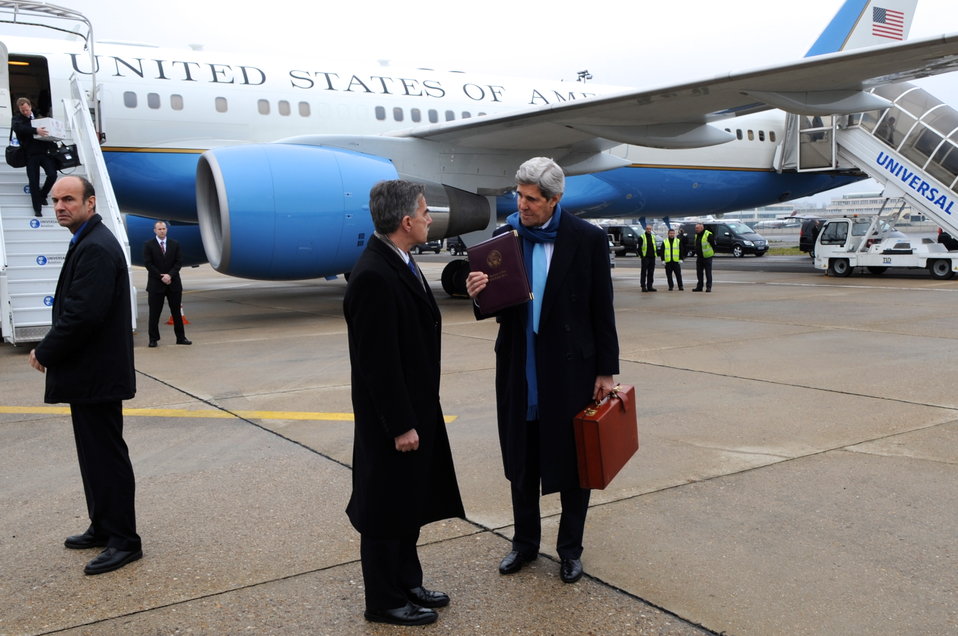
Secretary Kerry Arrives in Paris For London 11 Meeting

U.S. Secretary of State John Kerry speaks with U.S. Charges d'Affaires Mark Taplin after arriving in Paris, France, for a meeting of the London 11 on January 12, 2014.